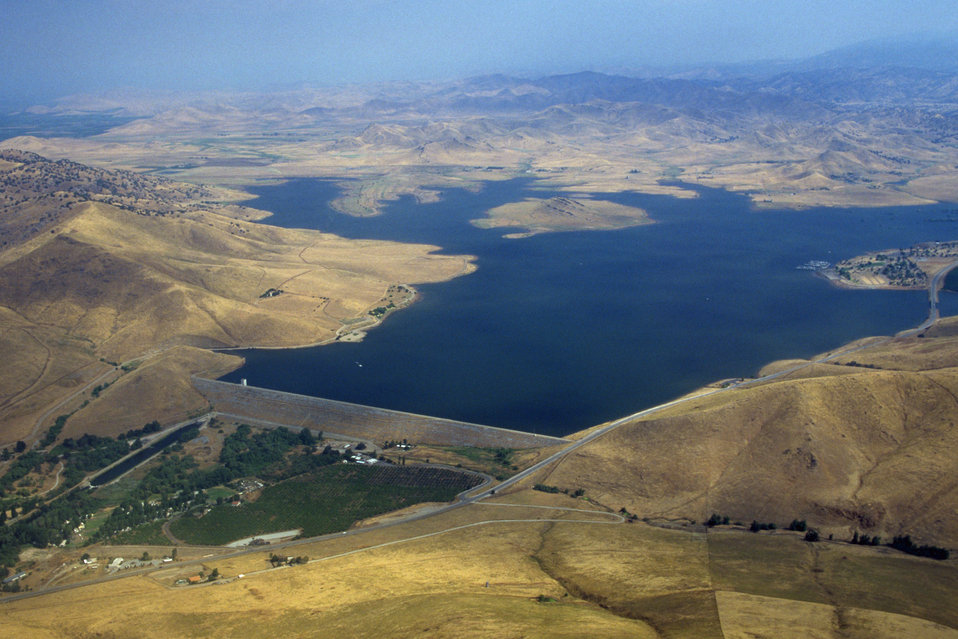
Success Dam

Looking north in an aerial view of Success Dam, located near Porterville, Calif., Nov. 8, 2004. The U.S. Army Corps of Engineers Sacramento District completed construction of Success Dam in 1961 and the reservoir provides flood risk management, water storage and recreational benefits to the local area.